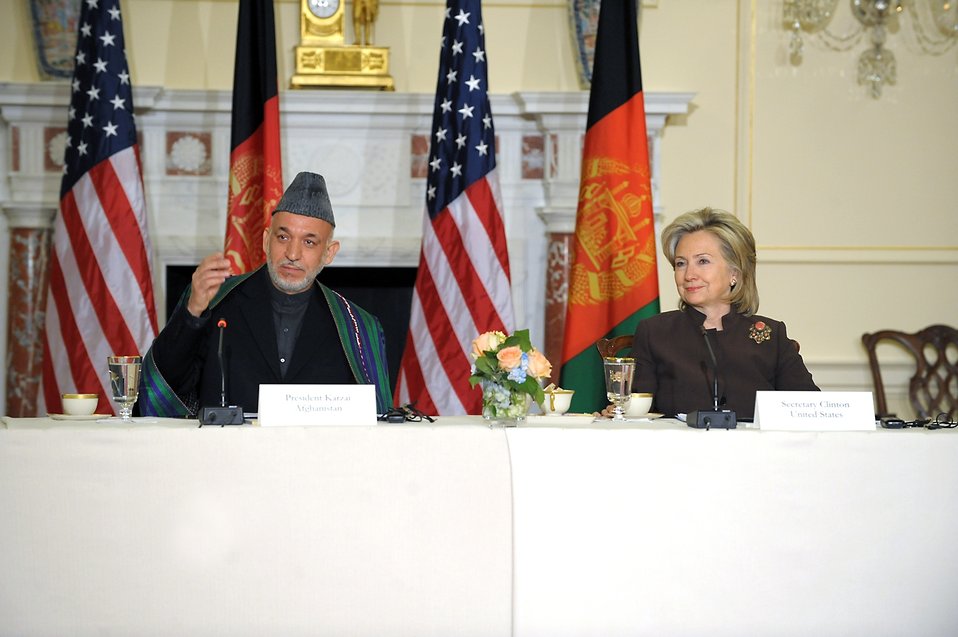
Secretary Clinton Hosts Bilateral Meeting With Afghan President Karzai

U.S. Secretary of State Hillary Rodham Clinton speaks with President of the Islamic Republic of Afghanistan Hamid Karzai during their bilateral meeting in the Ben Franklin Room at the U.S. Department of State, Washington, D.C., May 11, 2010.